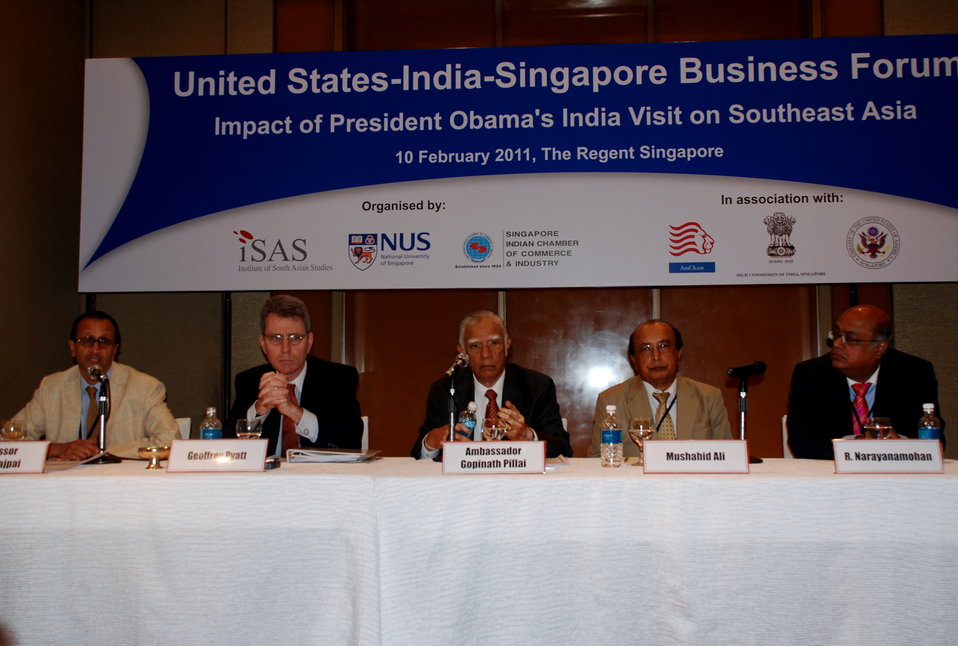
Principal Deputy Assistant Secretary Pyatt Participates in a Panel

Principal Deputy Assistant Secretary of State for South and Central Asian Affairs Geoffrey Pyatt, second from left, participates in a panel at the United States-India-Singapore Business Forum in Singapore on February 12, 2011.